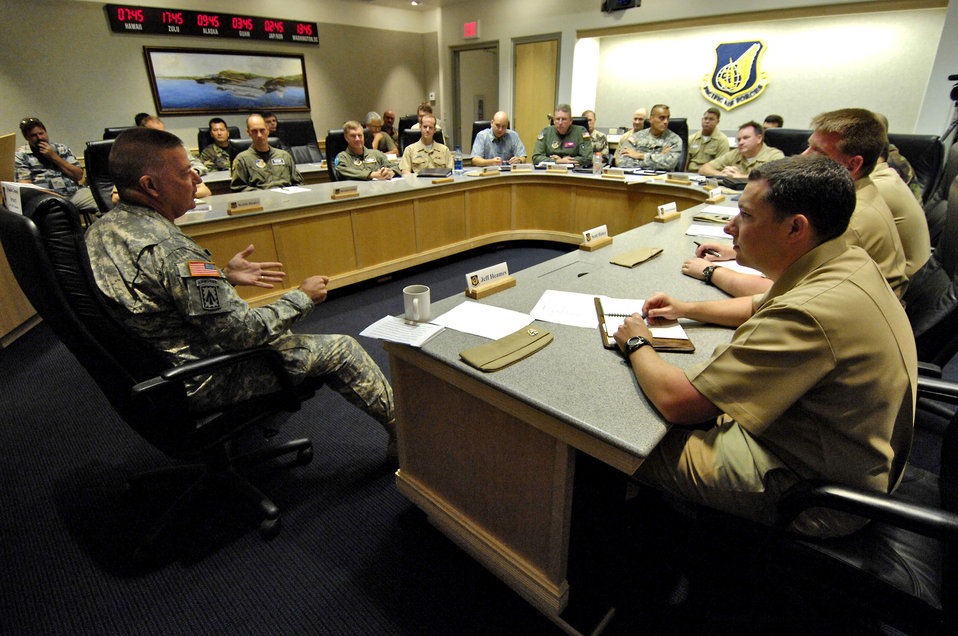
Missile defense experts meet in Hawaii

Brig. Gen. John E. Seward gives his opening remarks at the Joint Interface Control Officer Conference July 16, 2007 at Hickam Air Force Base, Hawaii. The conference is a four-day event involving joint interface control officers and ballistic missile defense experts from across the Pacific Command to focus on integrating BMD assets and capabilities to form a stronger alliance and interoperability for the future. Gen. Seward is the commander for the 94th Army Air and Missile Defense Command.